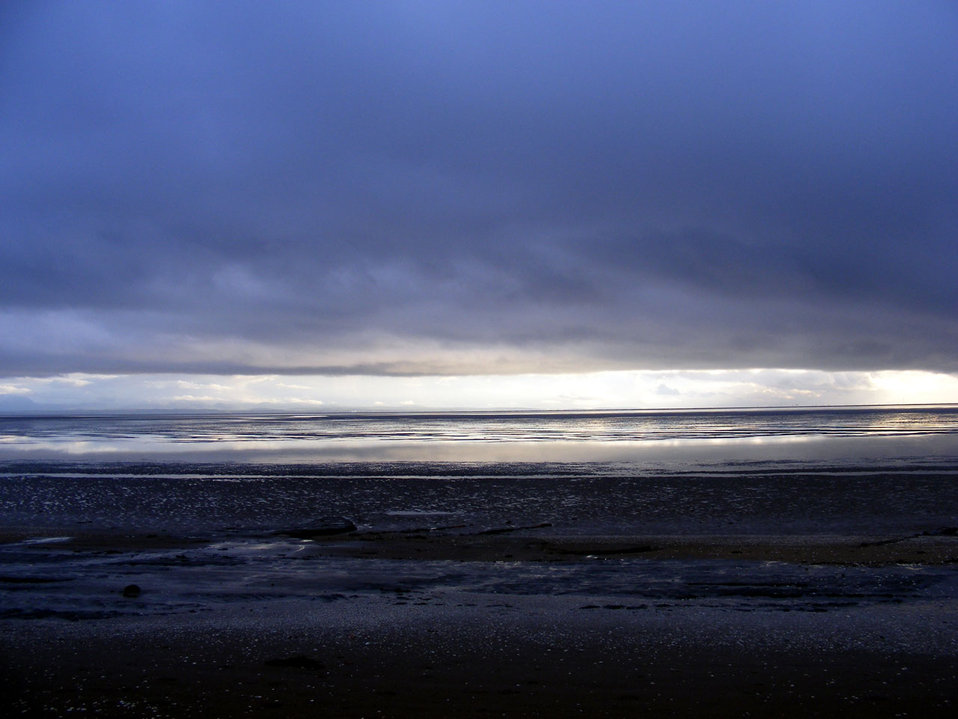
Sunset on the solway

Eveningtime on the solway firth.